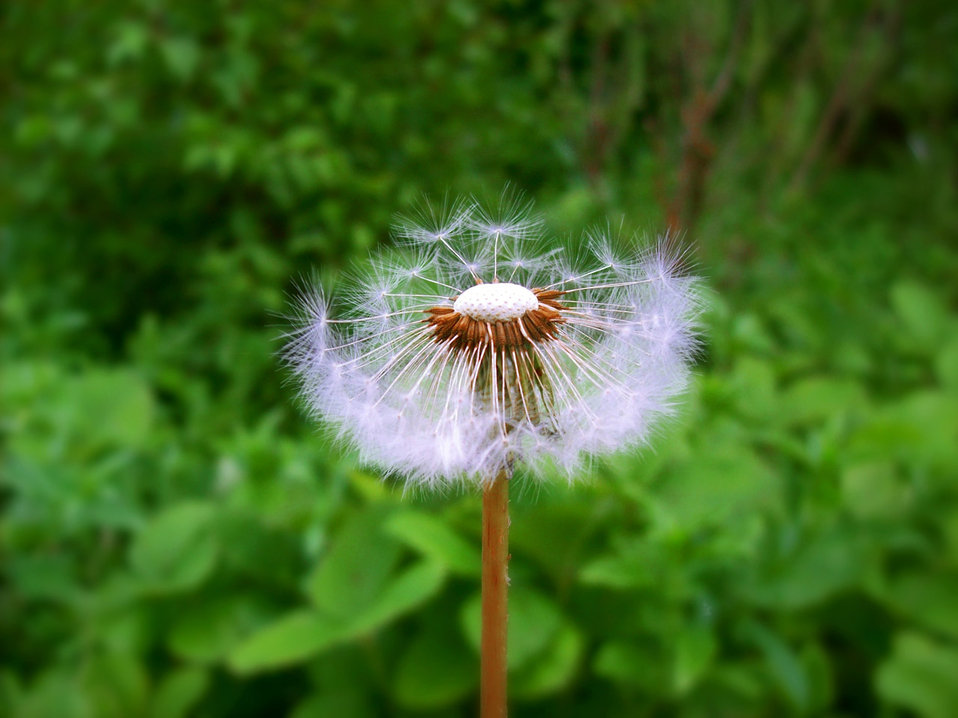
Dandelion flower.